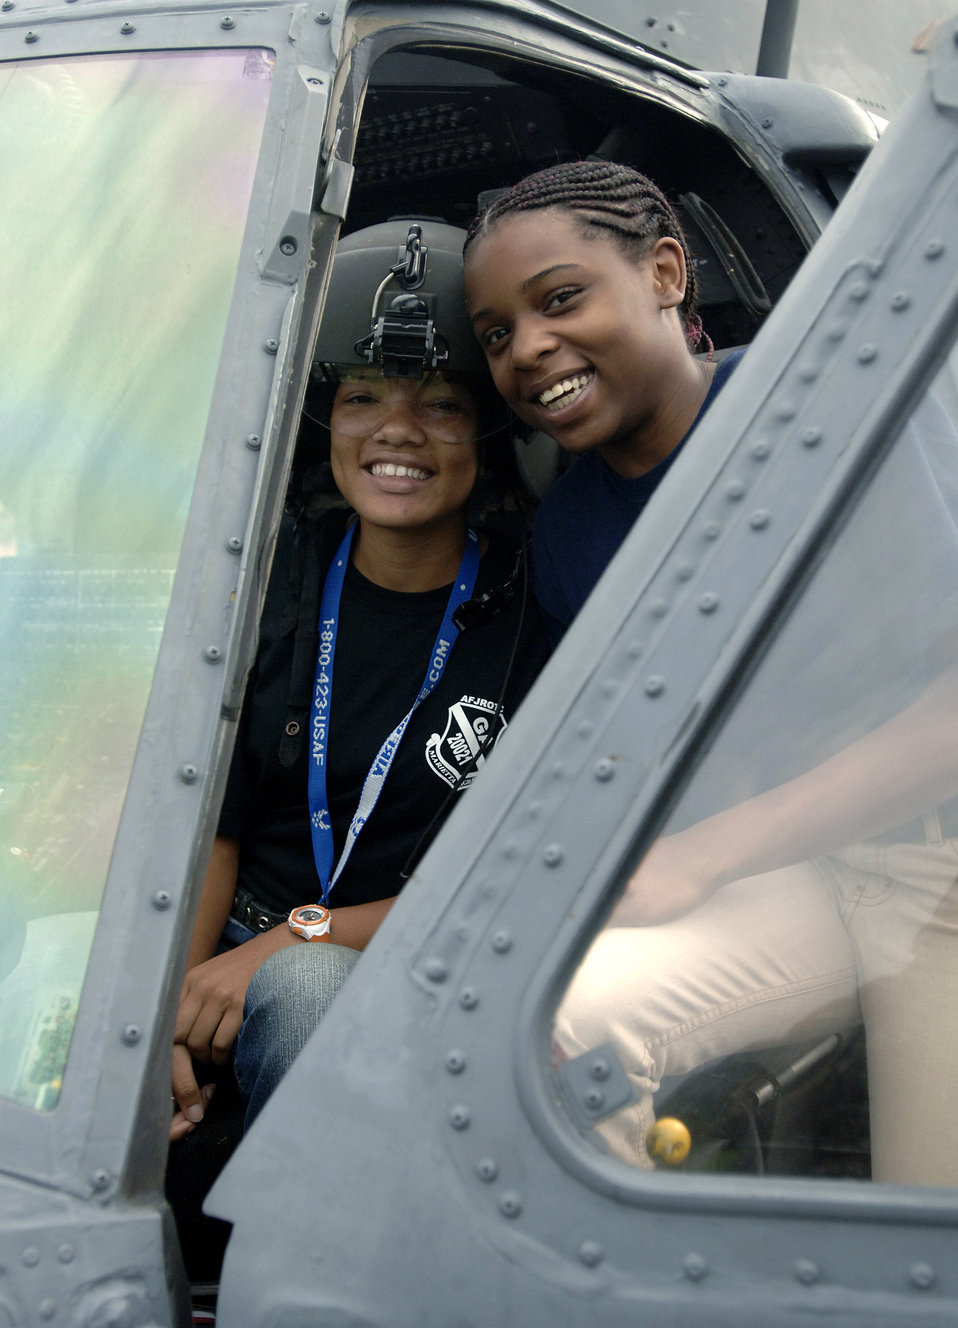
Airmen visit schools as part of Air Force Week Atlanta

Marietta High School students Yesenia Quinones (left) and T-Keyah Duke interact with a HH-60G Pave Hawk helicopter as part of an Air Force Week Atlanta event an Air Force Week Atlanta event Oct. 9 in Marietta, Ga. The event helped to educate students about the U.S. Air Force.